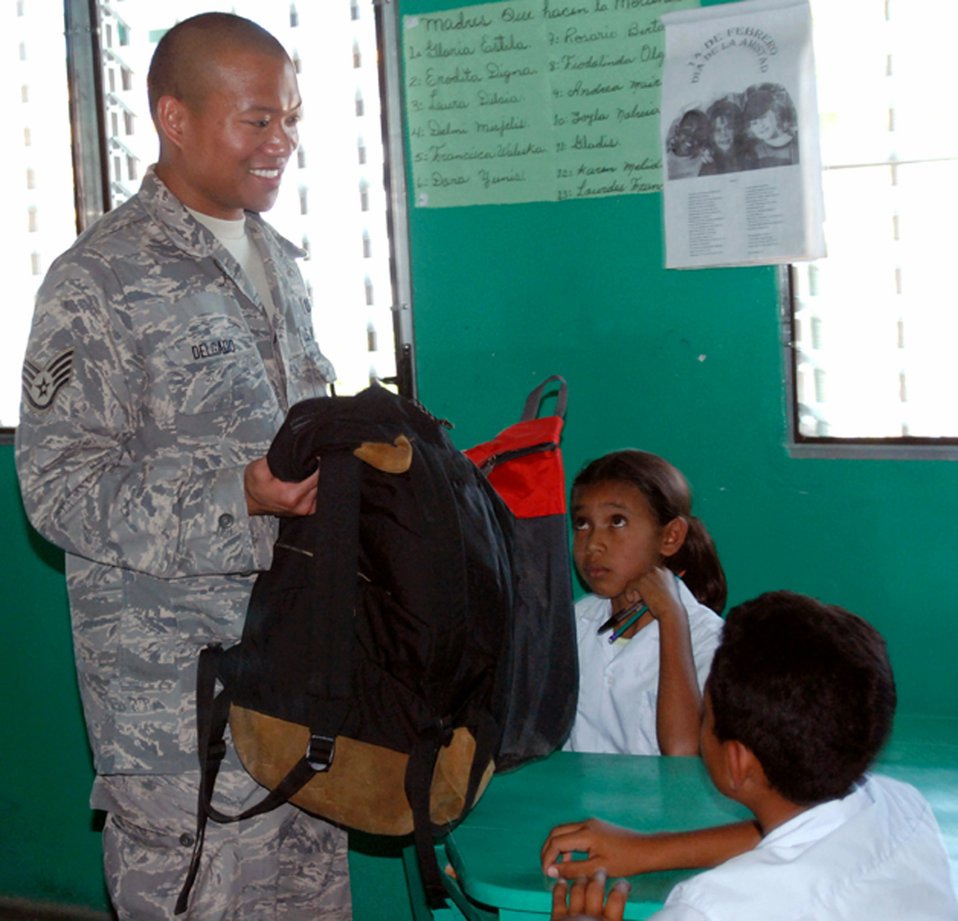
Servicemembers distribute supplies to Honduran school

Staff Sgt. Matthew Delgado gives backpacks packed with school supplies to children at a school Feb. 21 in Humuya, Honduras. Five representatives from the Give a Kid a Backpack Organization in Florida and 15 volunteers from Joint Task Force-Bravo from Soto Cano Air Base, Honduras, distributed more than 700 backpacks packed with school supplies to children at five schools and two orphanages in the Comayagua and La Paz districts. Sergeant Delgado is a JTF-Bravo Joint Operations Center controller.